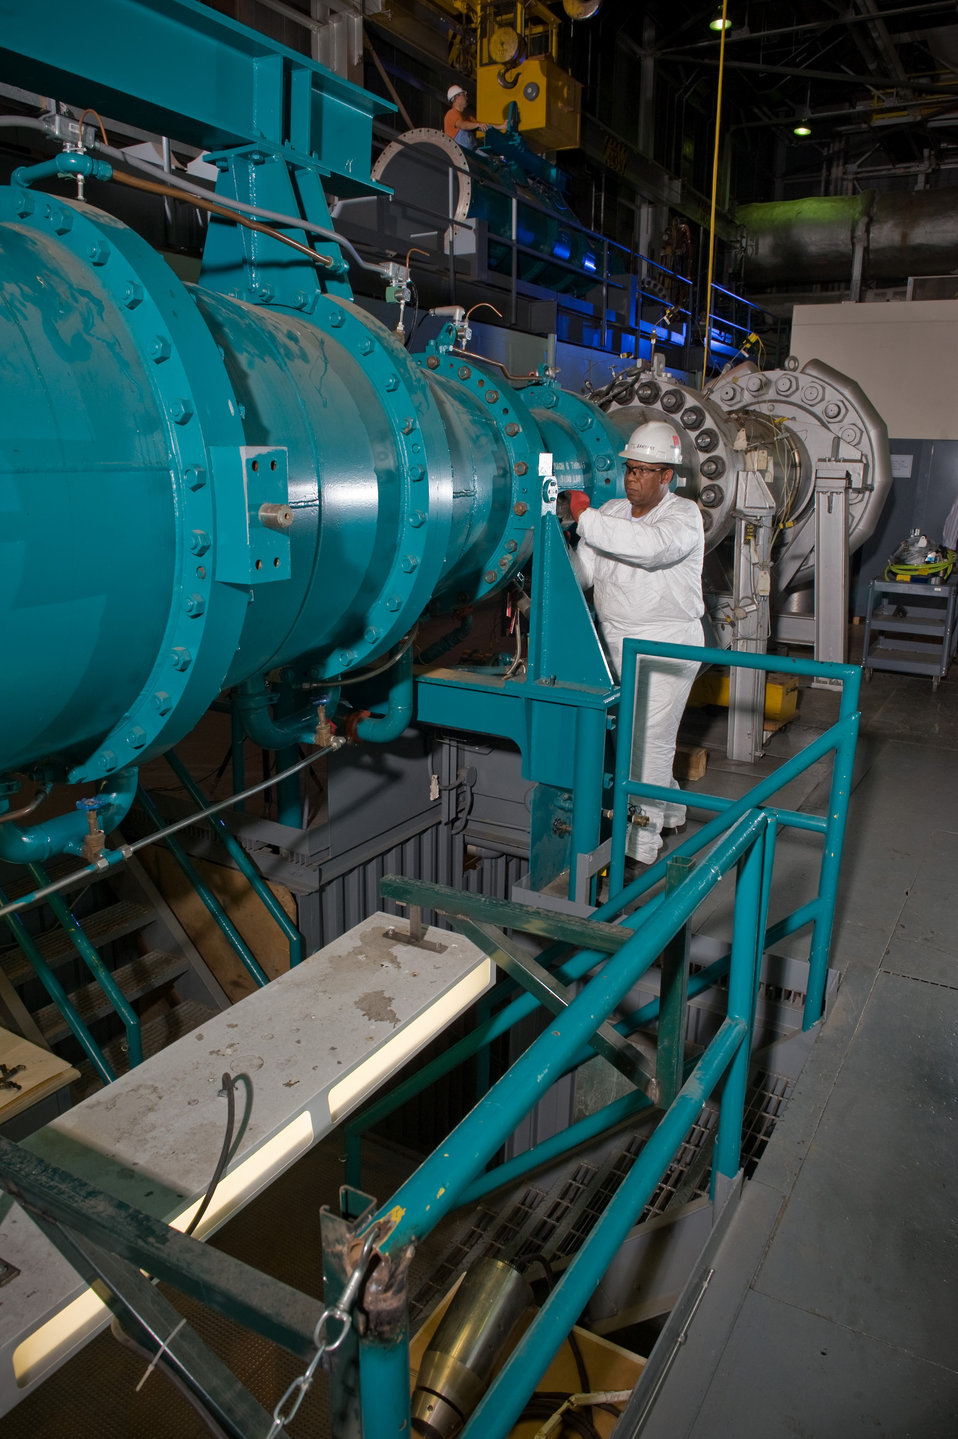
Blow Hard

Jimmie Sanders (in white) torques one of the many flange bolts that hold the 5,100-pound Mach 6 throat of a 50-inch closed-circuit hypersonic wind tunnel at the Von Karman Gas Dynamics Facility, Arnold Air Force Base, Tenn. Scott Pogue (behind on second floor) maneuvers a bridge crane hoist over the Mach 8 throat assembly in its second-story storage rack. Air comes up through a pipe at the end of the silver section and can then be heated as it moves into the venturi and on to the test section just beyond and left of blue section seen. Workbenches below the tunnel allow mounted scale models and their mounts to be mechanically lowered out of the tunnel and be worked on while the air continues to flow. The facility operates three continuous-flow wind tunnels that are powered by a nine-stage compressor system that is an eighth of a mile long and is driven by six electric motors providing a grand total of 92,000 horsepower.